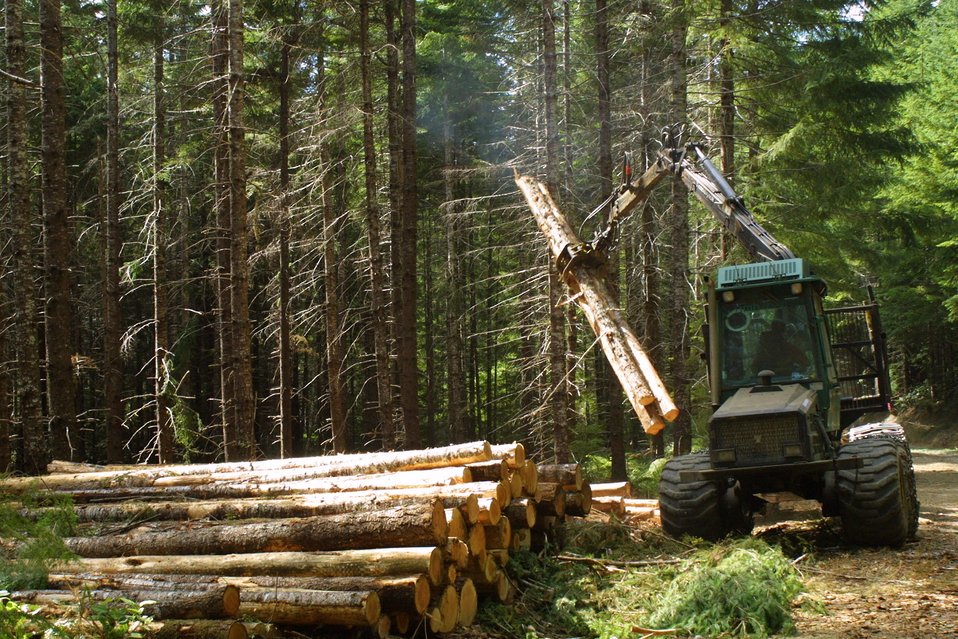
Camas East Timber Sale in Late Successional Reserve.